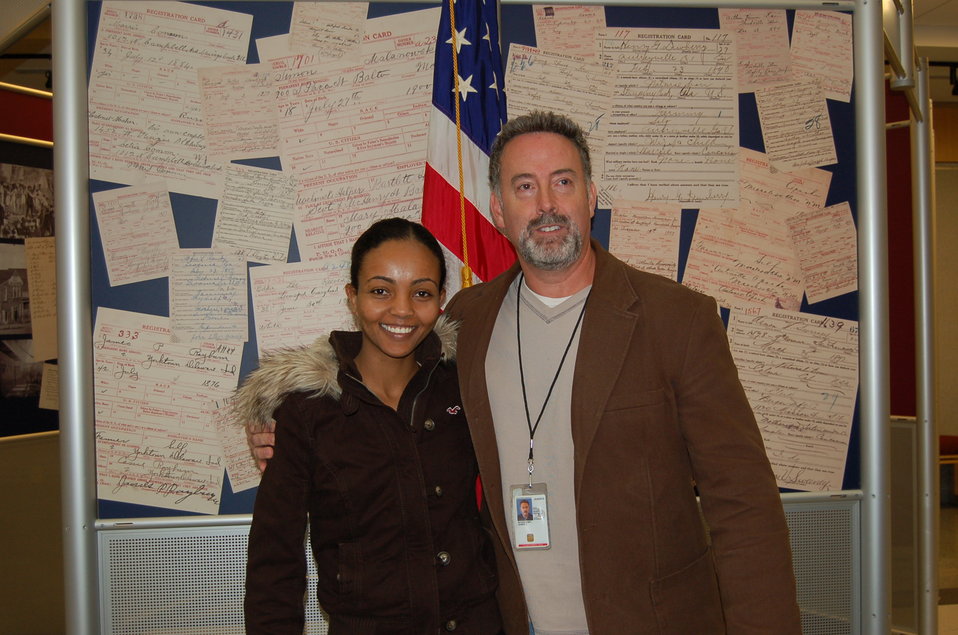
New Citizens